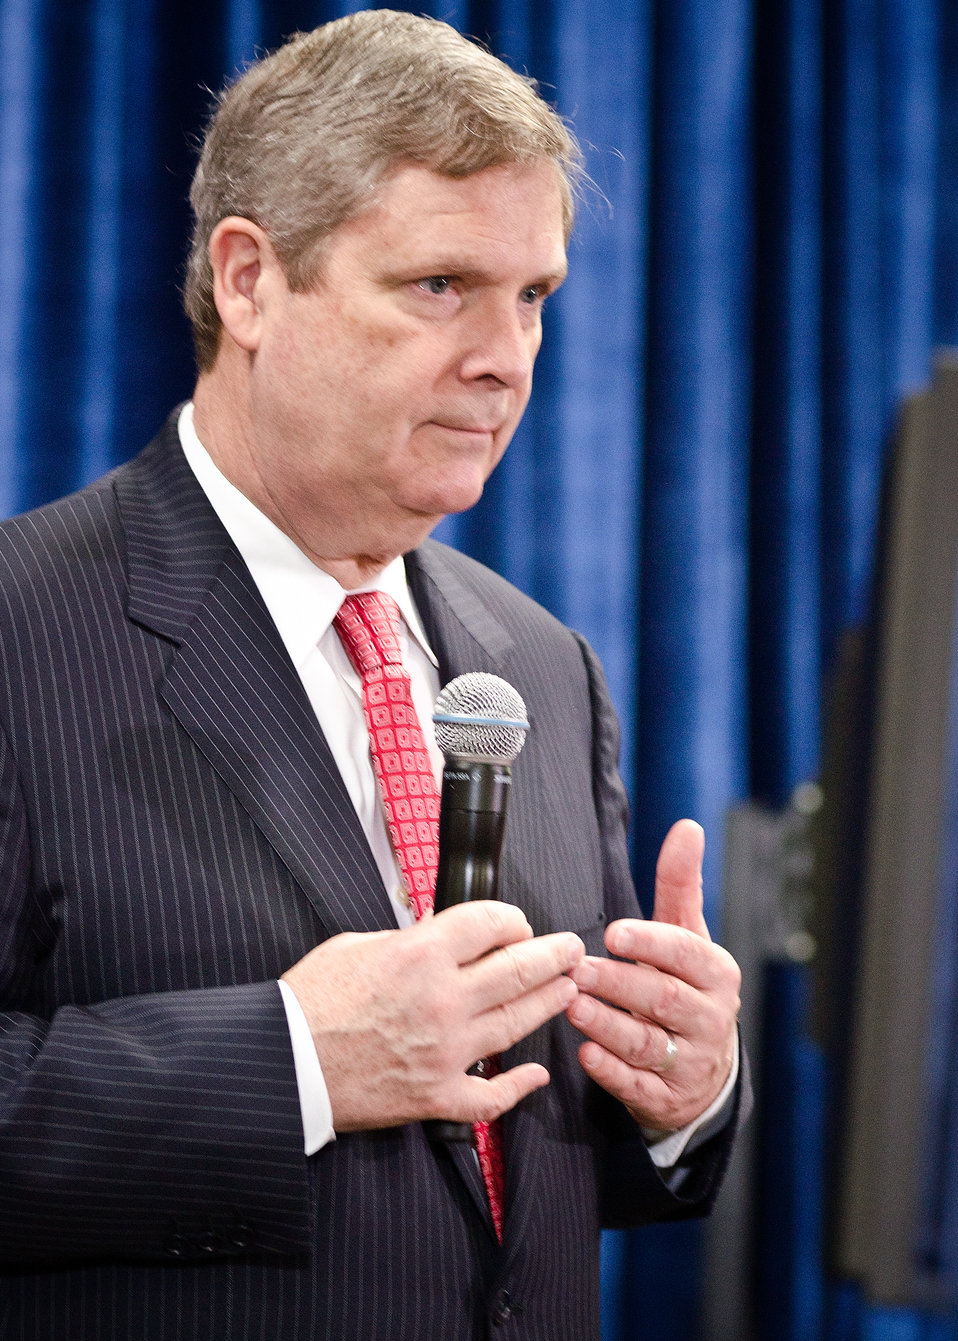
Agriculture Secretary Tom Vilsack offered U. S. Department of Agriculture (USDA) employees the opportunity to ask questions about the Blueprint for Stronger Service Initiative and hear directly from the Secretary Vilsack during the Ask The Secretary event held in the South Building Cafeteria, in Washington, D.C., on Wednesday, March 21, 2012, The Blueprint for Stronger Service Initiative aims to build a modern and efficient service organization that is closely timed with technological innovations - and better suited to respond to 21st century agricultural challenges.